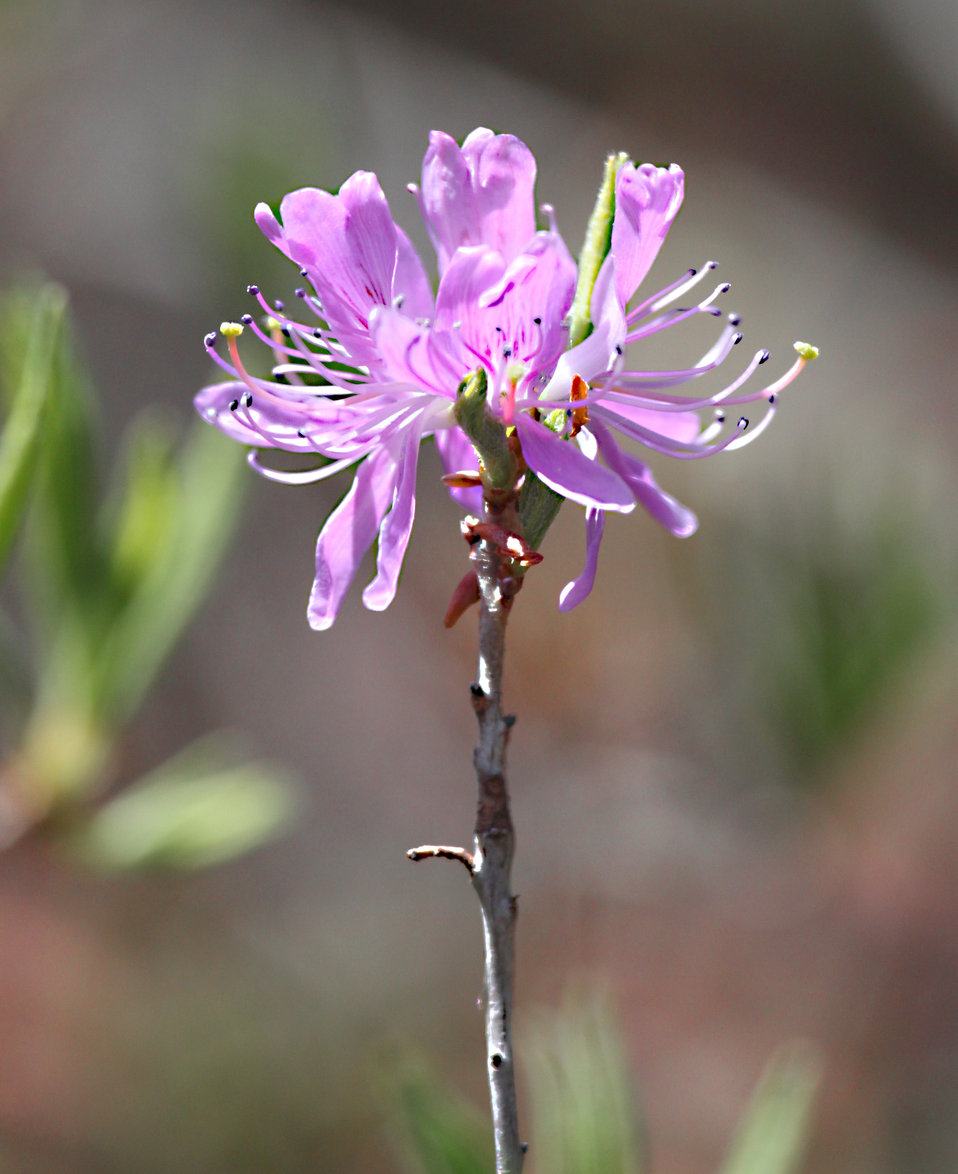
Rhodora in bloom

Rhodora-Missisquoi NWR
Photo Credit: Ken Sturm; USFWS